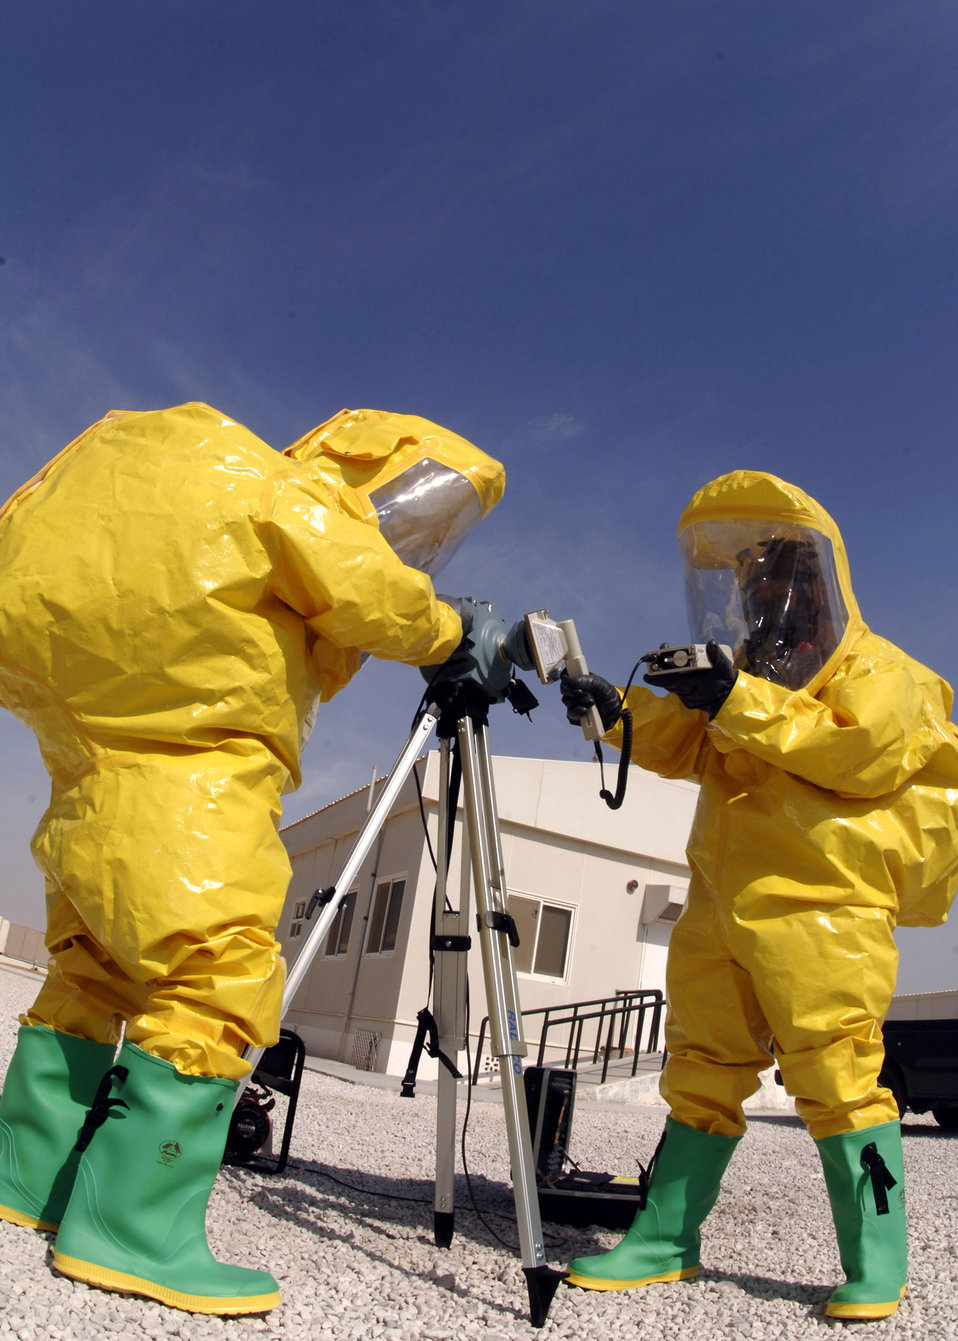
Keeping Airmen safe, secure

Staff Sgt. Thomas Hefty and Airman 1st Class Brandon Stephens wear Level A suits while using a radeco air sampler and an ADM-300 during a simulated chemical attack. Sergeant Hefty and Airman Stephens are bioenvironmental engineering technicians with the 379th Expeditionary Medical Group in Southwest Asia.